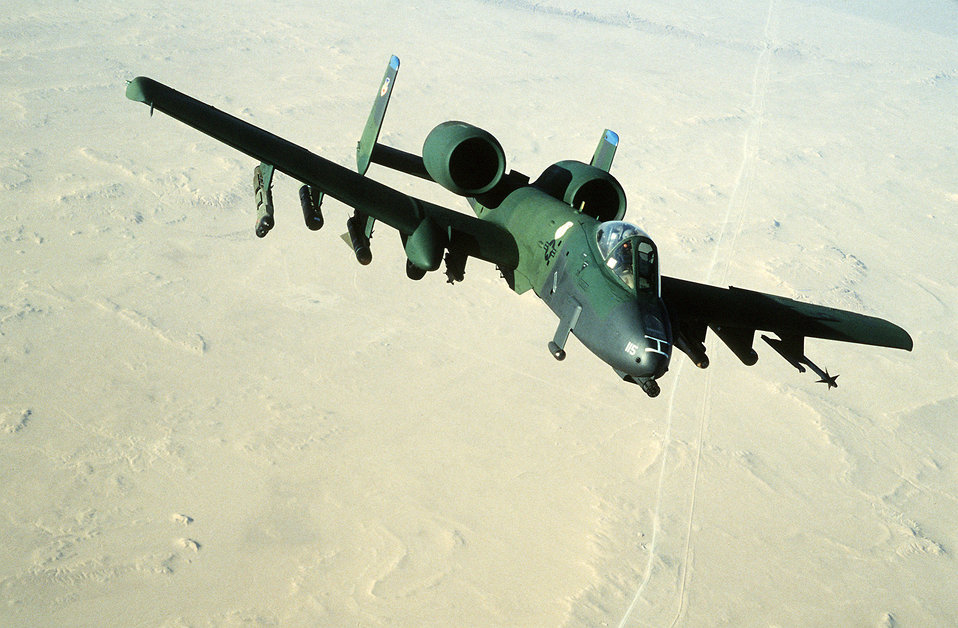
A-10A Thunderbolt II

1990's -- An air-to-air view of an A-10A Thunderbolt II attack aircraft from the 354th Tactical Fighter Wing, Myrtle Beach Air Force Base, S.C., during Operation Desert Shield.